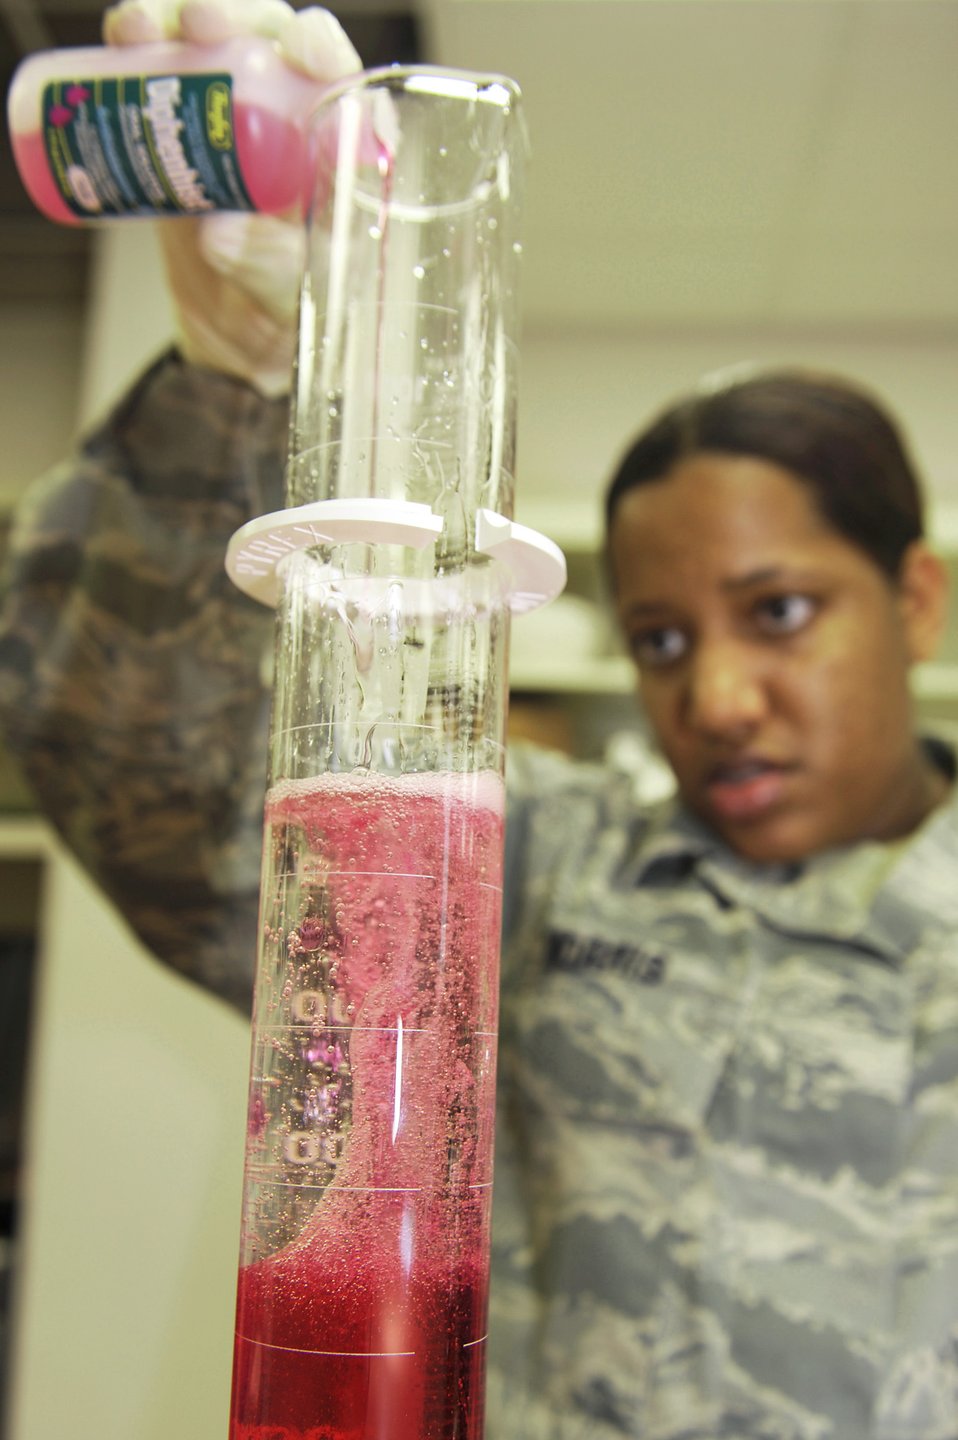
May cause drowsiness

Staff Sgt. Shanika Morris pours liquid antihistamine into a measuring cylinder Jan. 26, 2011, at Ellsworth Air Force Base, S.D. Sergeant Morris is a pharmacy supervisor assigned to the 28th Medical Support Squadron.